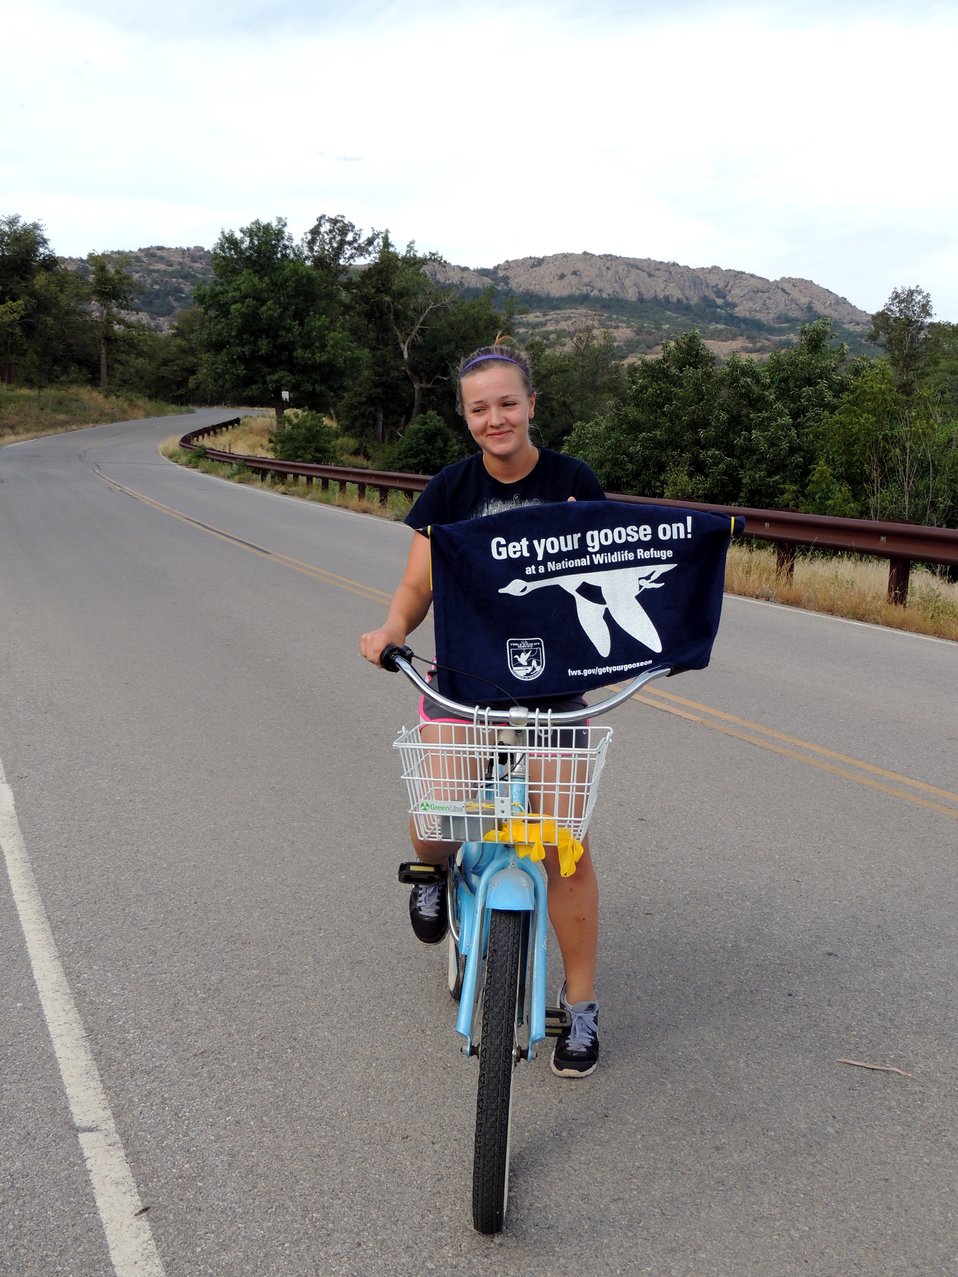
Get Your Goose On!

Wichita Mountains National Wildlife Refuge in Oklahoma.